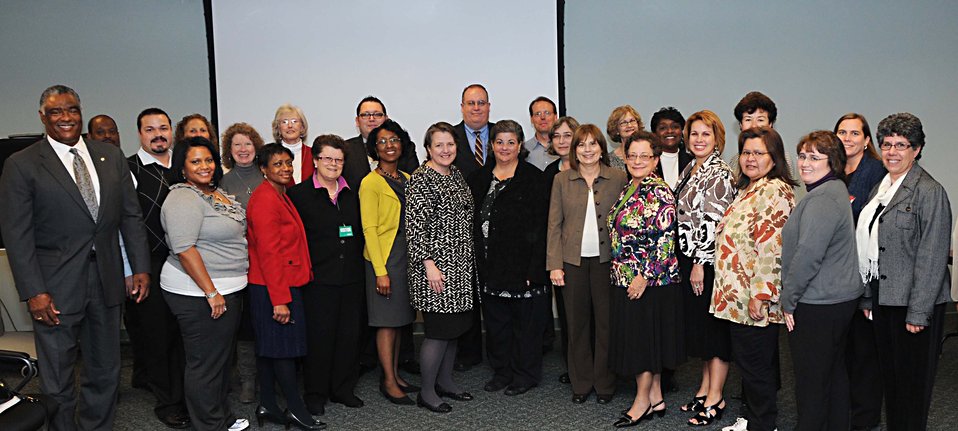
Agriculture Deputy Secretary Kathleen Merrigan visits with Food and Nutrition Services Southeast Regional Administrator, staff and State Women Infant Children (WIC) Directors in Atlanta, GA on Wednesday, November 2, 2011. Secretary Merrigan talked about the Department and Food and Nutrition Programs and answered questions from those in attendance.